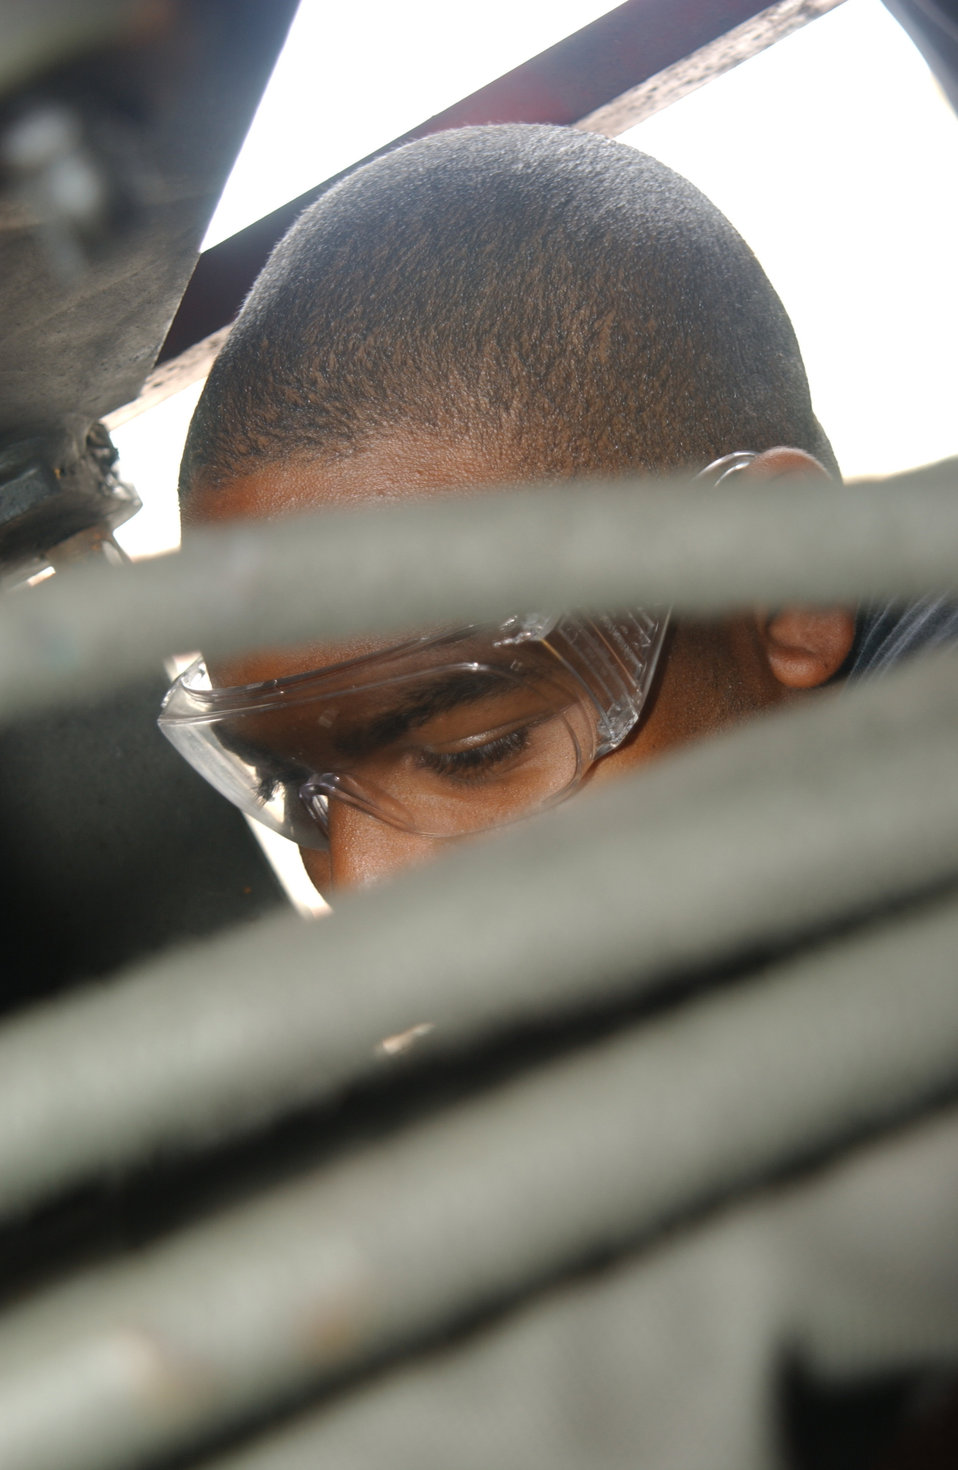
Quick fix

KADENA AIR BASE, Japan -- Senior Airman Aaron Hardy repairs the break disc on a forklift here May 24. Airman Hardy is assigned to the 733rd Aircraft Maintenance Squadron.